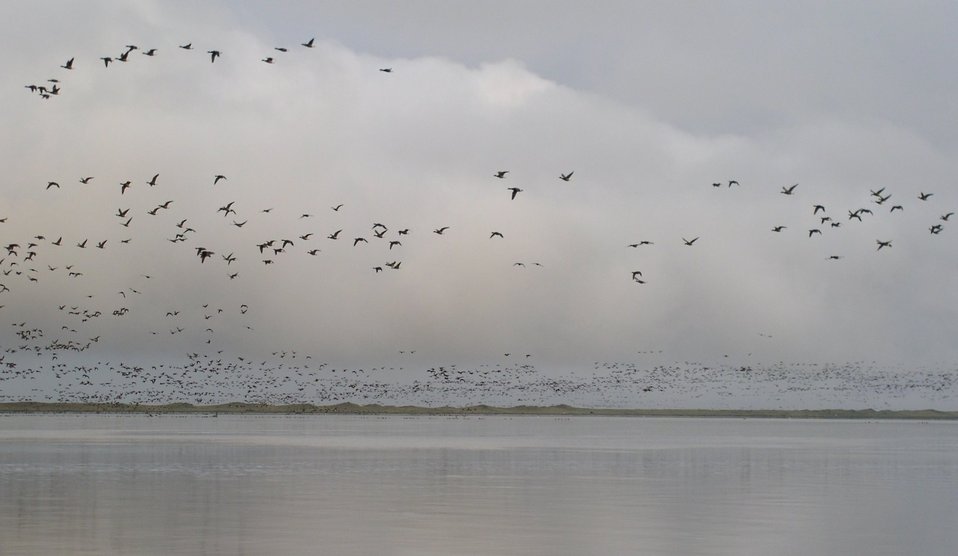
Brant at Izembek Lagoon

Izembek National Wildlife Refuge